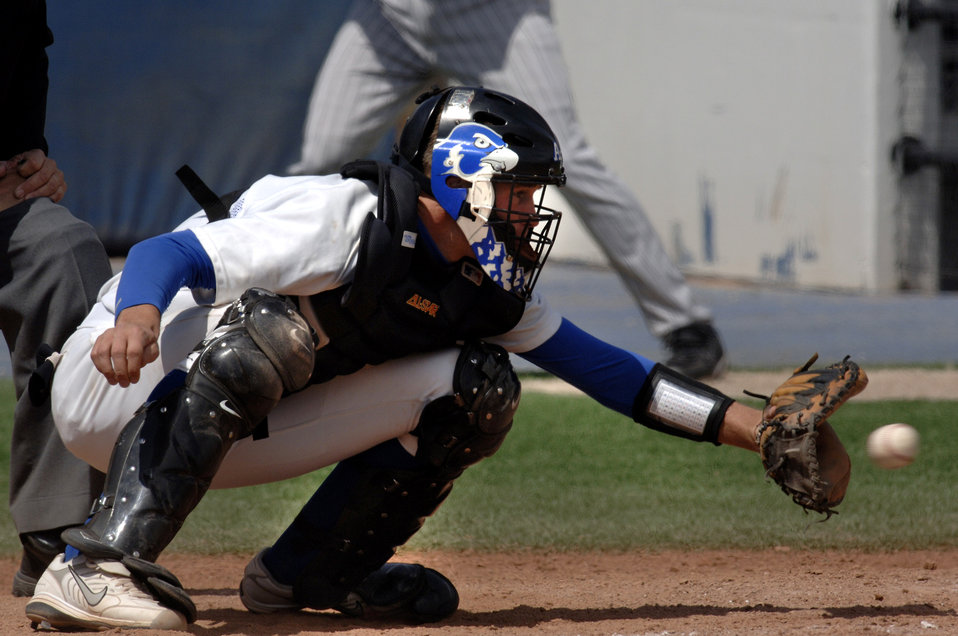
New Mexico sweeps Falcons

Junior Cadet catcher Josh Meents had a busy day behind the plate as the New Mexico Lobos swept the 3-game series from the Air Force Falcons.